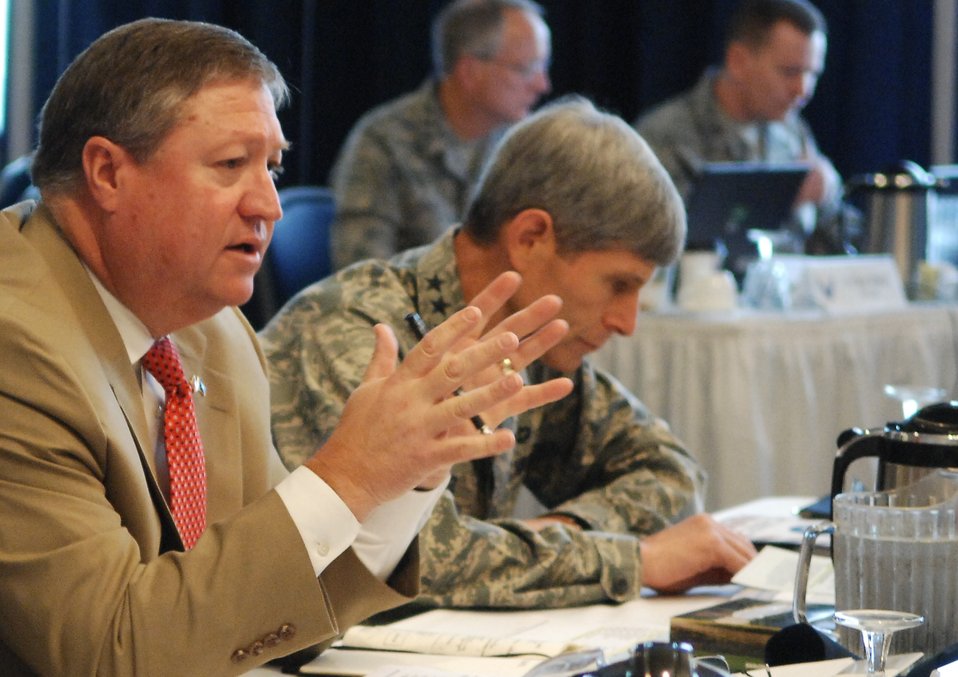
Senior leaders meet to discuss, decide way ahead for force

Acting Secretary of the Air Force Michael B. Donley speaks Aug. 27, during a strategic summit at Bolling Air Force Base, D.C.